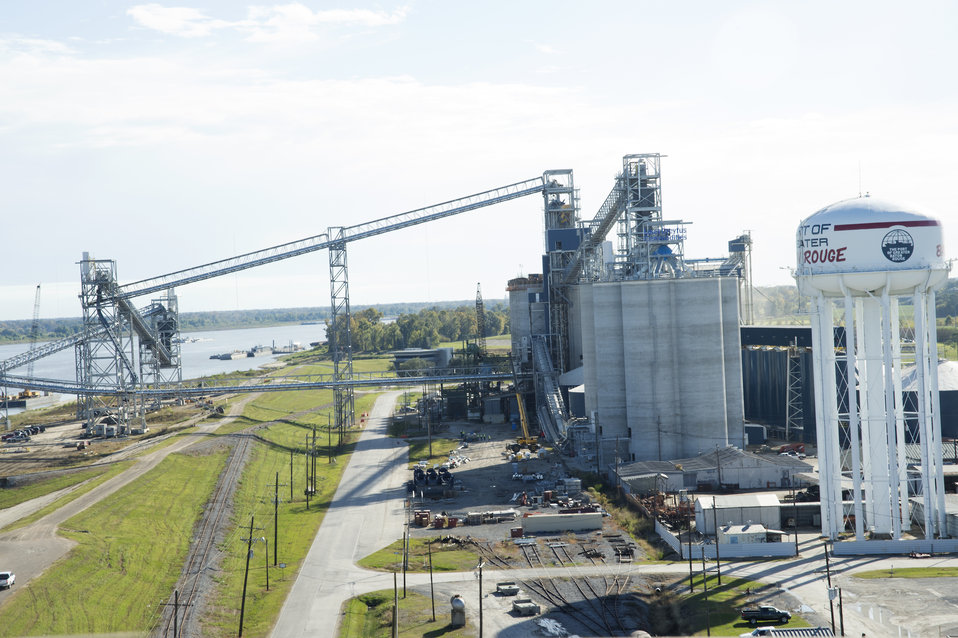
Grain elevators on the Mississippi River near the port of New Orleans, LA on Tuesday, Nov. 19, 2013.